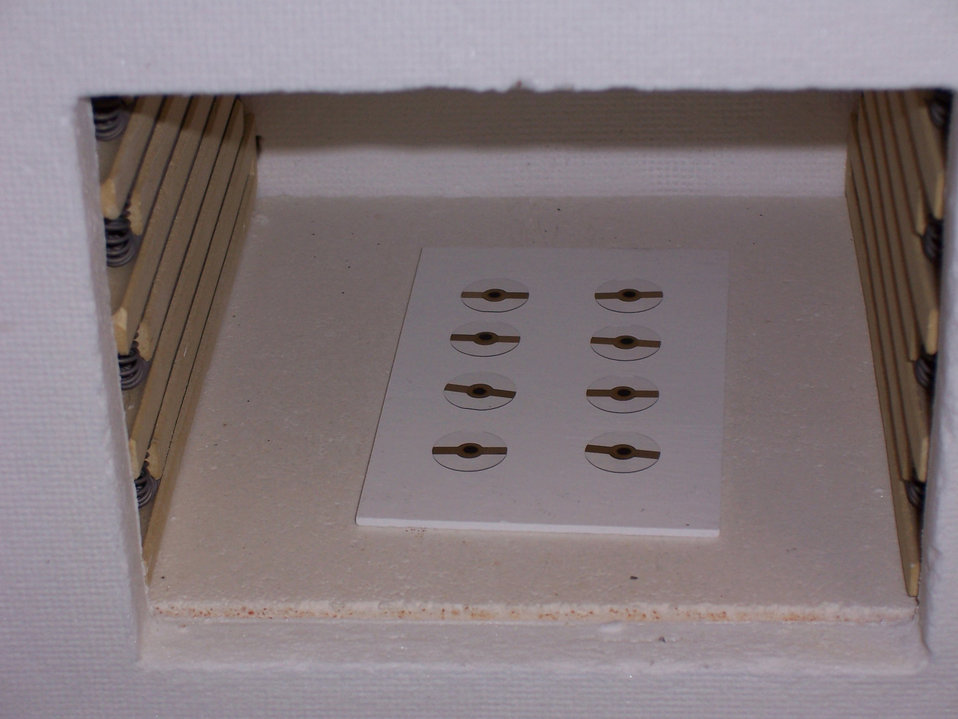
Piezoelectric Quartz Crystals

Small piezoelectric quartz crystals are the key to micro thermogavimetric analysis. Here, the crystals with samples on top are baked under controlled conditions. Mass changes are detected by changes in the crystal frequency.